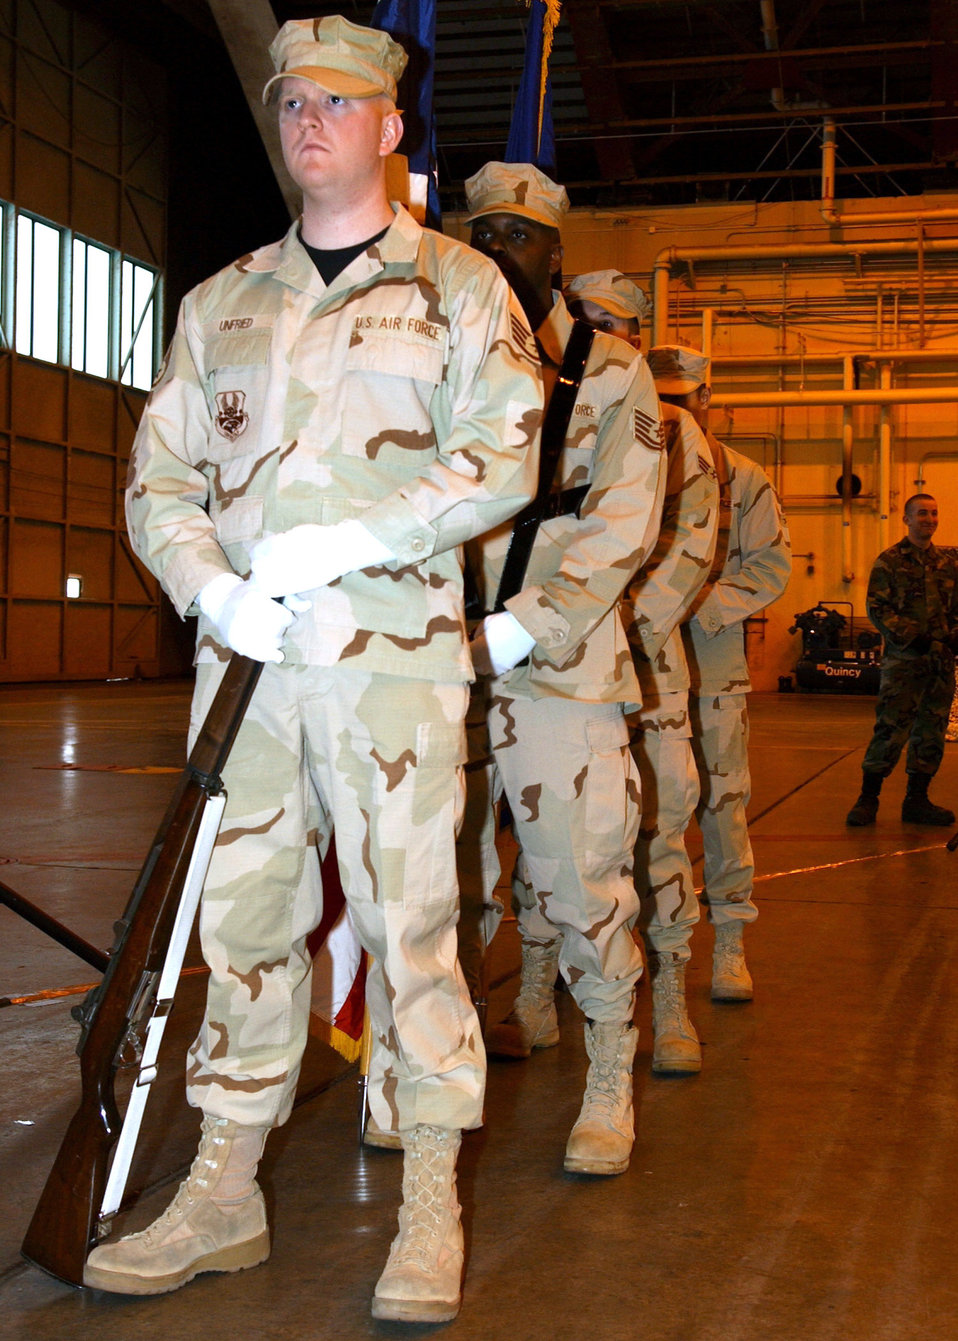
Welcome Home Ceremony

Honor Guard members wait in preparation for the posting of the colors in the Thunderdome at Eielson Air Force Base, Alaska March 9 during the 354th Fighter Wing Welcome Home Ceremony. The ceremony honored more than 400 Airmen who returned from deployments over the past six months.